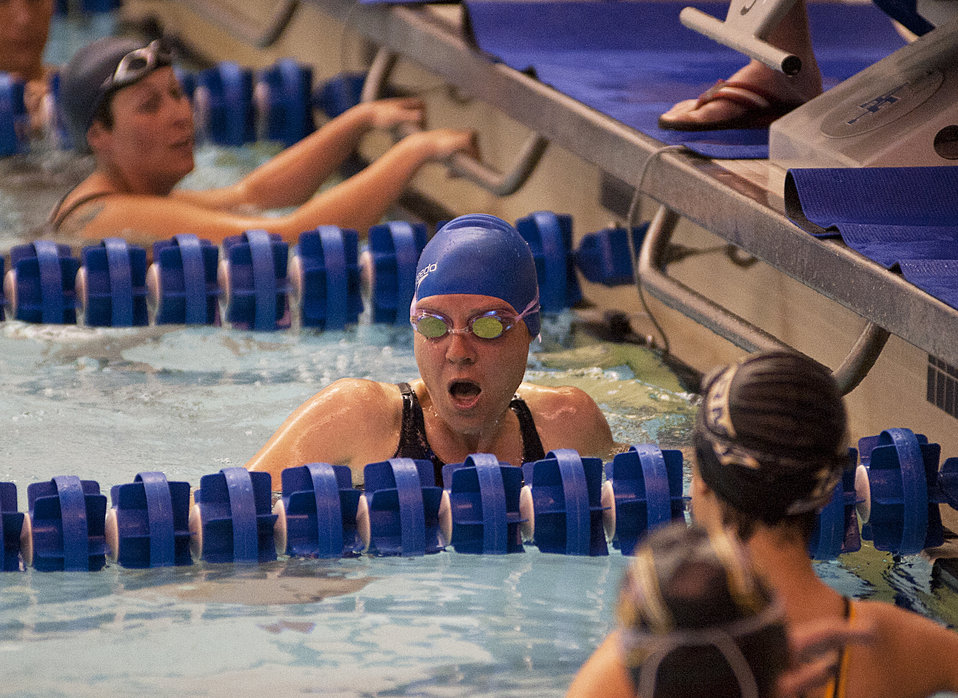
Warrior Games

U.S. Air Force Tech. Sgt. Katie Robinson, center, looks at her time after finshing a heat during swimming competitions at Warrior Games 2012 at the U.S. Air Force Academy in Colorado Springs, Colo., May 5, 2012. Robinson is with the Air Force team.